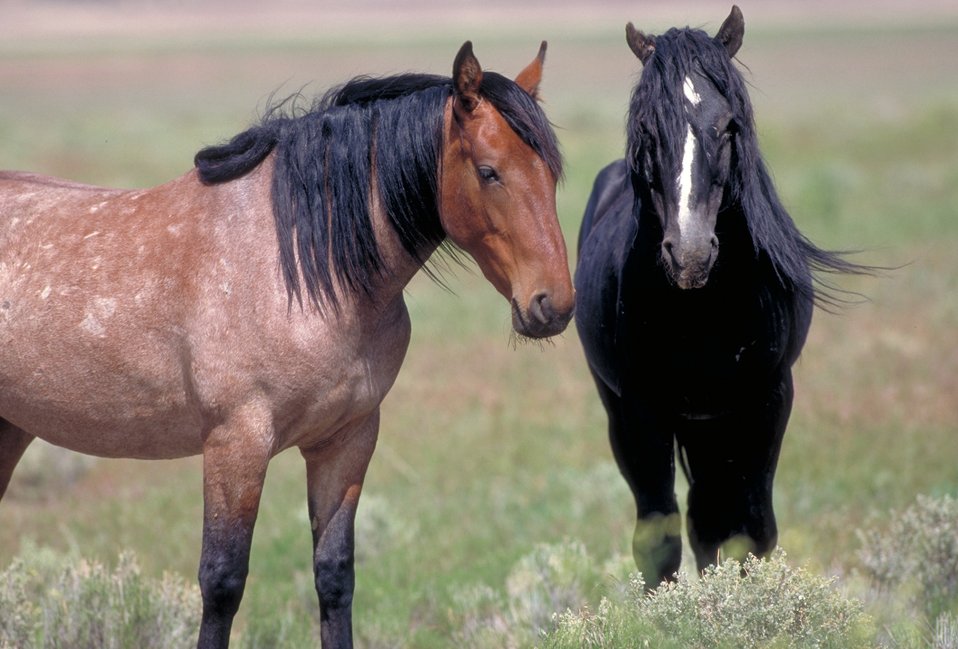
Onaqui Herd near Dugway, Utah.